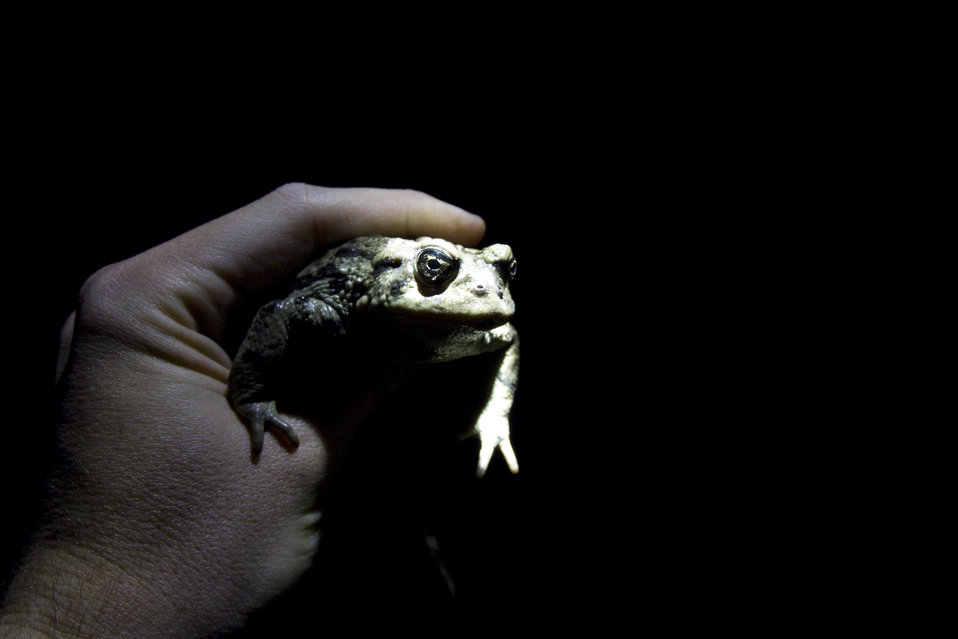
Amargosa Toad

Partners for Fish and Wildlife Program. Beatty, Nevada.